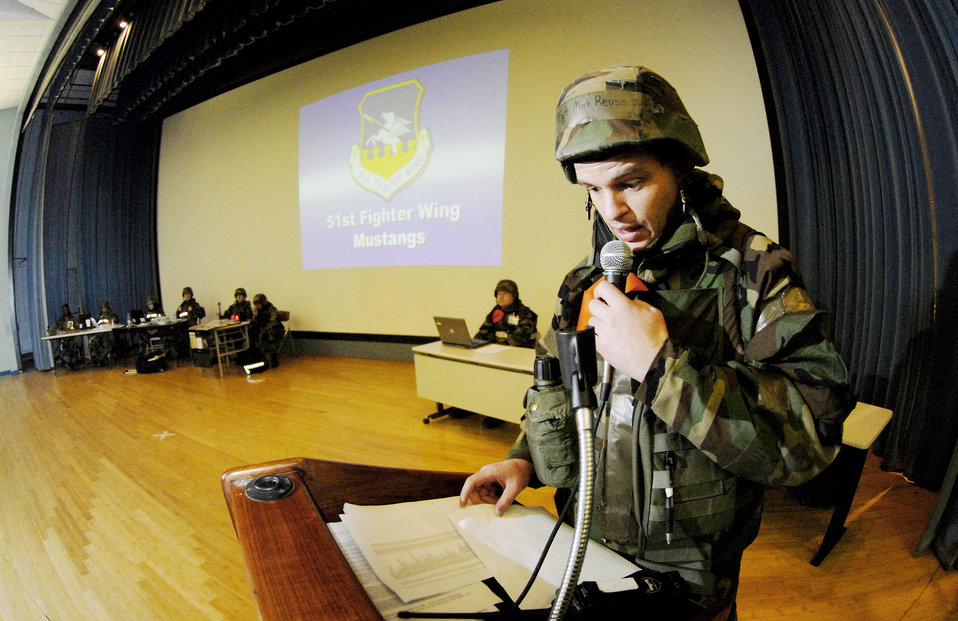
Osan Airmen provide force, equipment sustainment

Master Sgt. Mark Reuss conducts accountability of Airmen present at the base's reception processing unit during an operational readiness exercise in July 2009 at Osan Air Base, South Korea. As new Airmen arrive during exercises or contingencies, they are processed through the RPU, which is where checks are made to make sure they have all basic mobility items. Sergeant Reuss is assigned to the 51st Force Support Squadron.